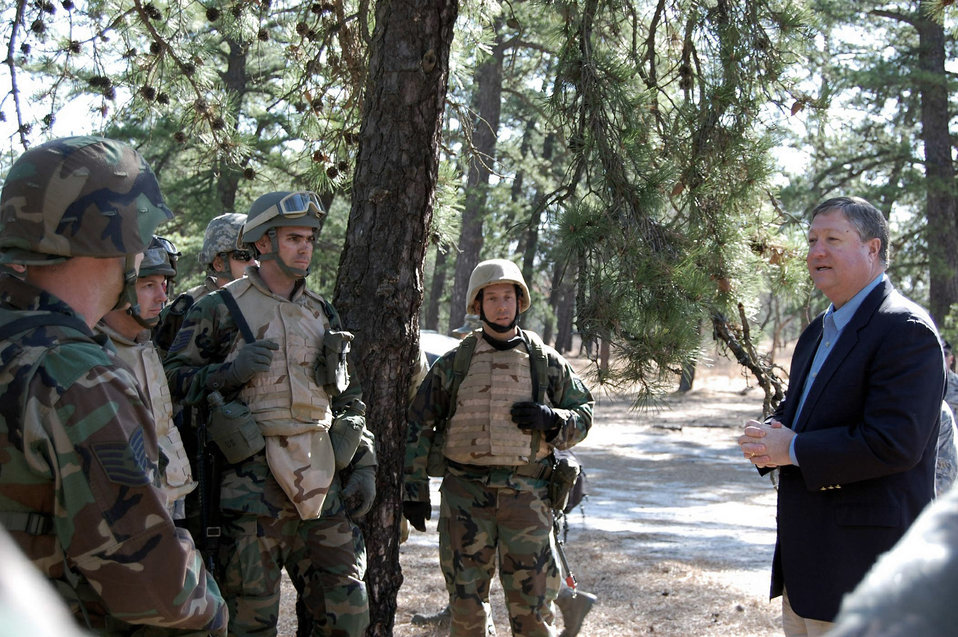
SECAF visits USAFEC

Secretary of the Air Force Michael Donley chats with Airmen March 31 who are attending the Advanced Contingency Skills Training Course on Fort Dix, N.J. Secretary Donley was visiting the U.S. Air Force Expeditionary Center to see its facilities and training venues. Besides Fort Dix, Secretary Donley visited McGuire Air Force Base and Naval Air Engineering Station Lakehurst to learn more about the Joint-Basing Initiative.